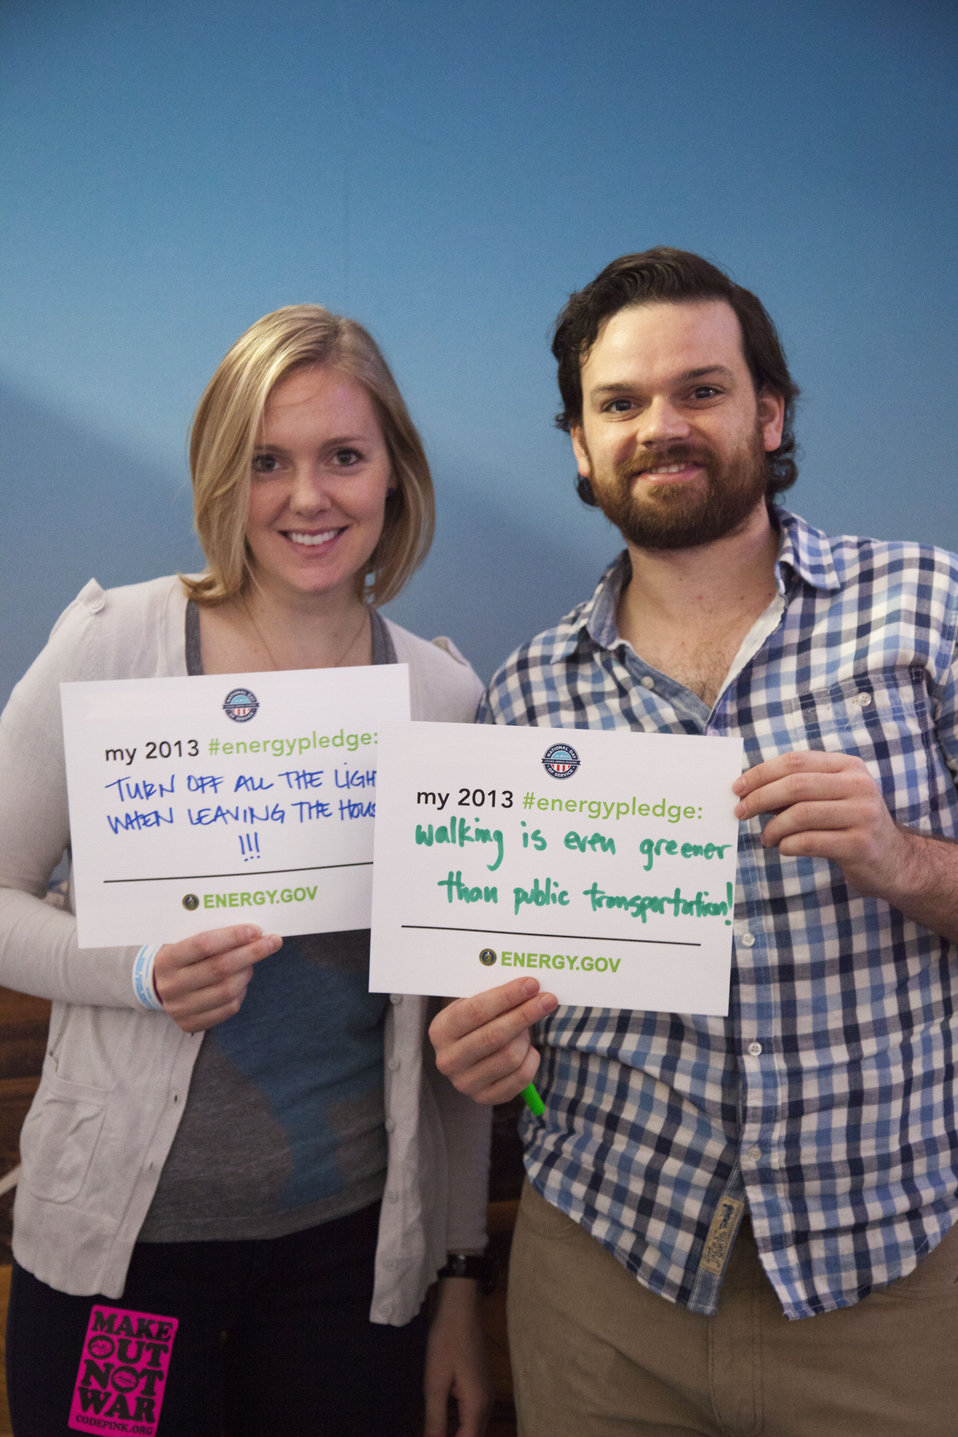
What's your #energypledge?